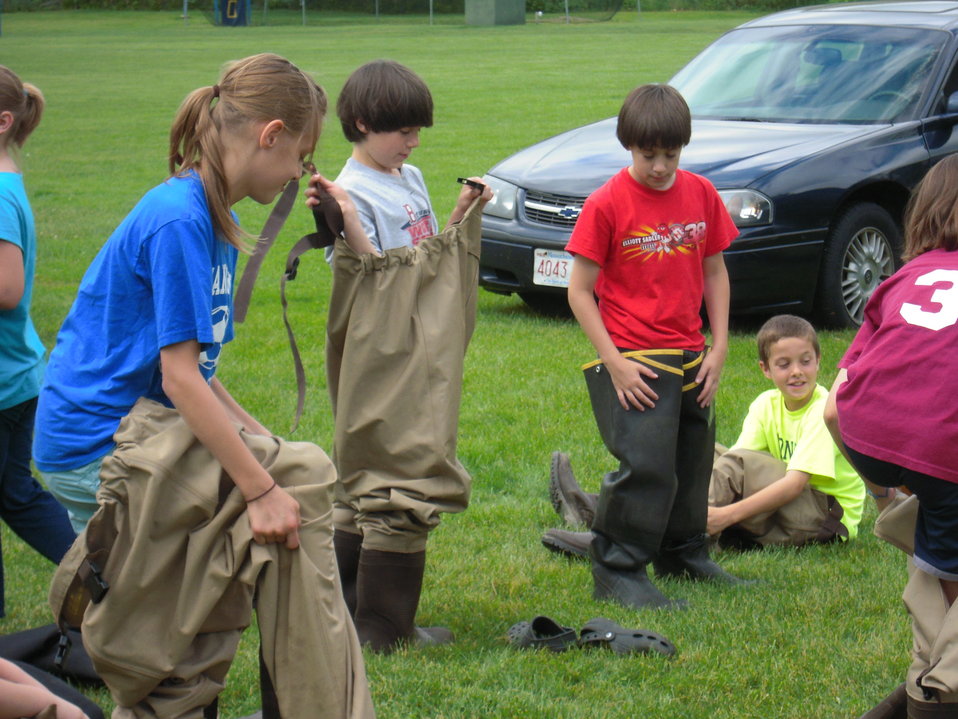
Putting on waders